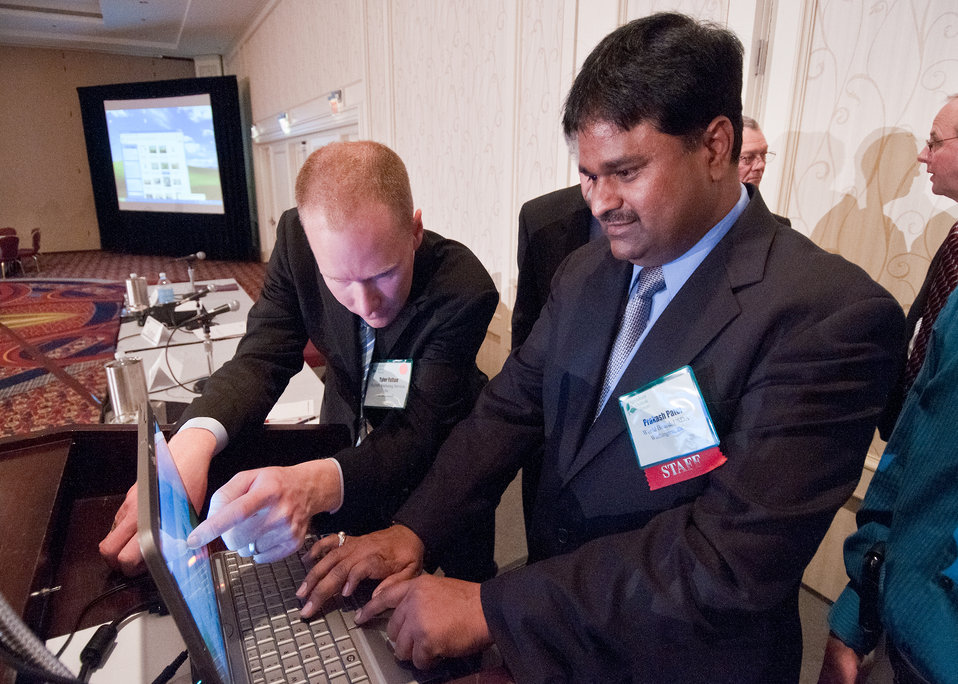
Prakash Patel, World Agricultural Outlook Board, United States Department of Agriculture (right) loads Tyler Fulton's presentation at the World Agricultural Outlook Board Forum in Crystal City, VA, February 25, 2011.